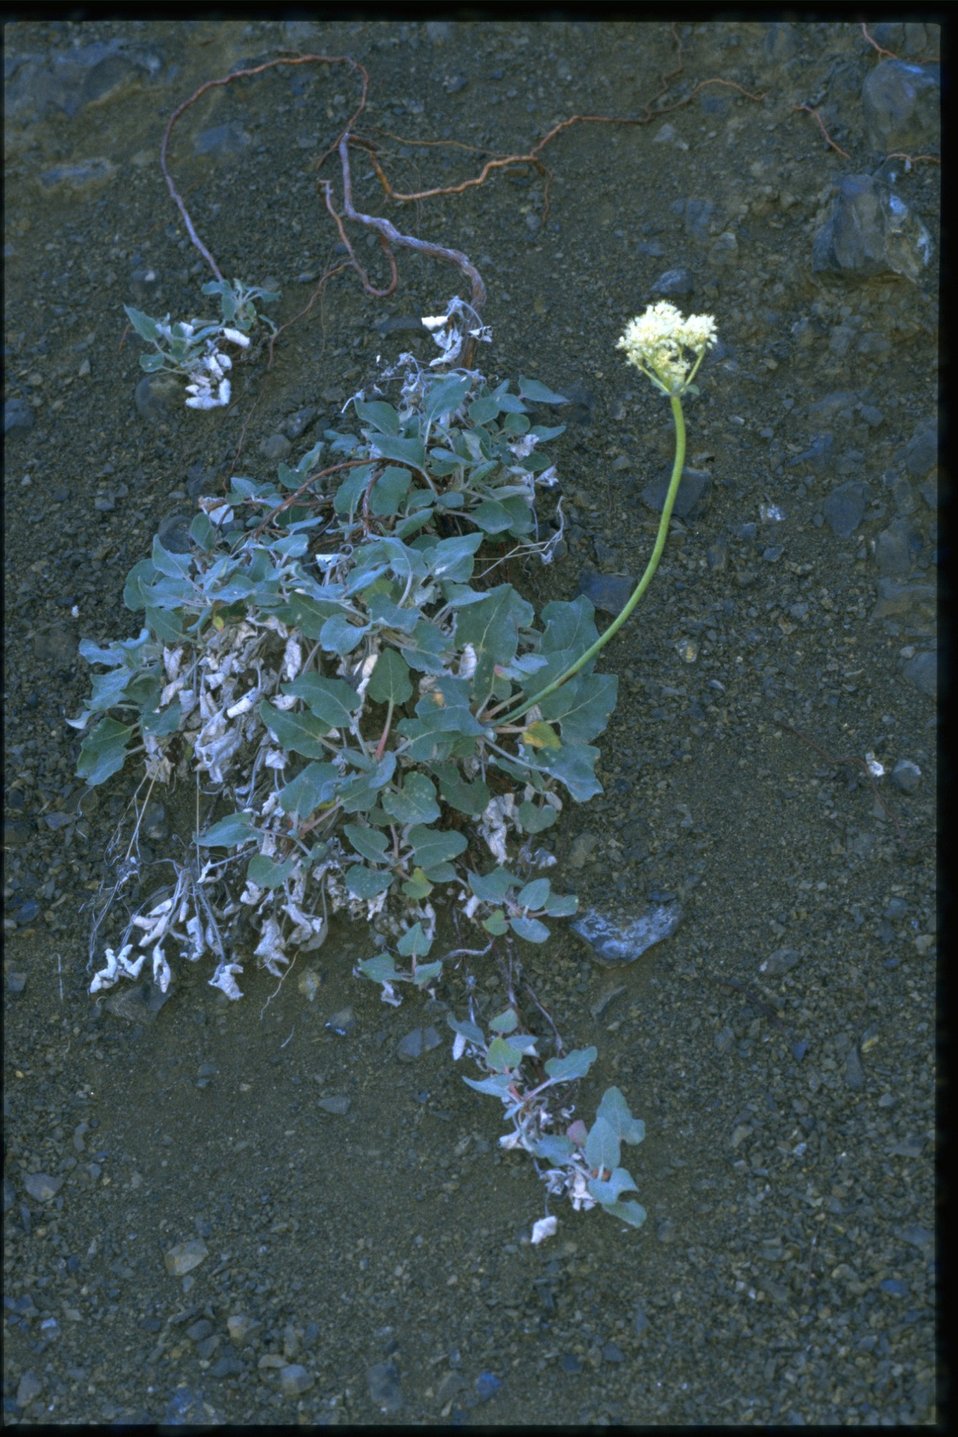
Medium shot of Apiaceae.